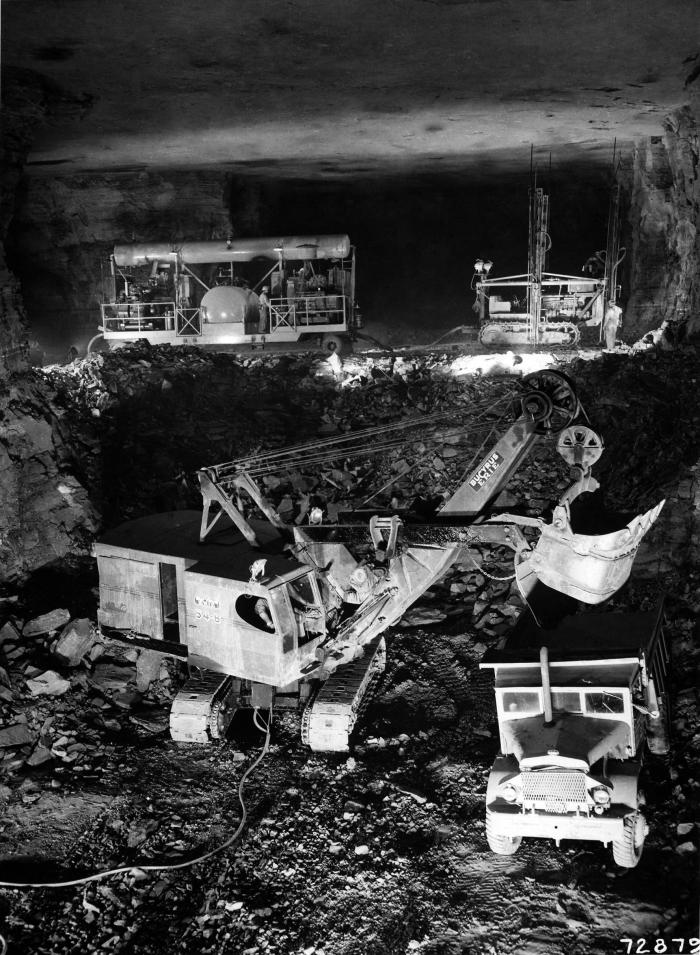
From the 1950s or 1960s, this historic image was provided by the Center for Disease Control's (CDC), National Institute for Occupational Safety and Health (NIOSH) depicted the interior of a coal mine. In this scene there were a number of mining machines and vehicles visible, including a bucket crane in the process of filling a dump truck in the foreground, while in the background there were two partnered machines, an excavator, and its power house, which looked as if it powered the excavator with a pneumatic pump.